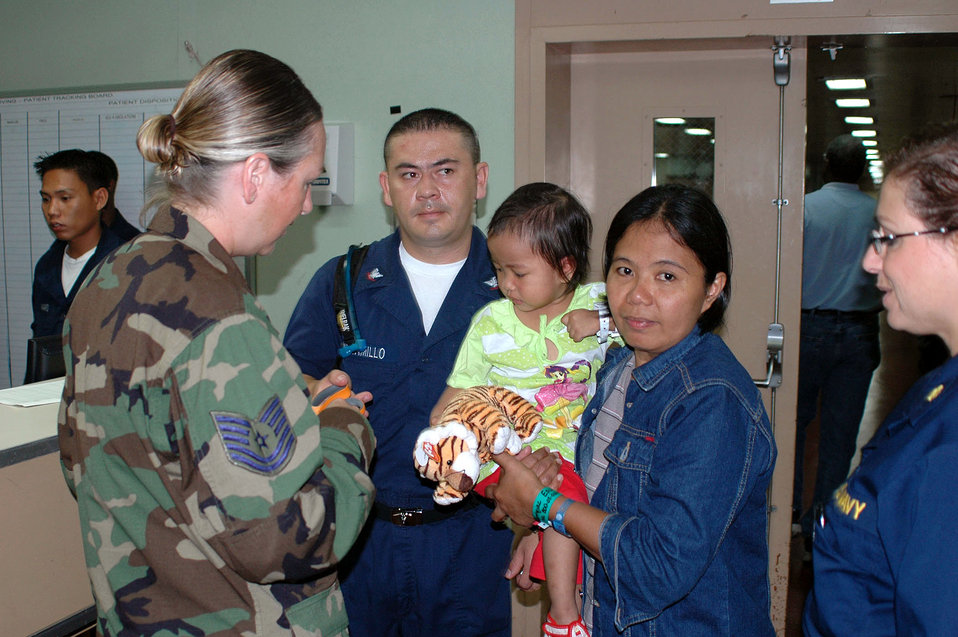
Aboard the USNS Mercy

Tech. Sgt. Carla Lefrancois and Hospital Corpsman 3rd Class Javier Jaramillo admit a patient to the casualty receiving area aboard the U.S. Navy hospital ship, USNS Mercy, while anchored off the city of Zamboanga, Philippines on Friday, May 26, 2006. The crew is conducting humanitarian and civic assistance in South and Southeast Asia and the Pacific Islands. Sergeant Lefrancois is one of several Air Force medical professionals on the ship.